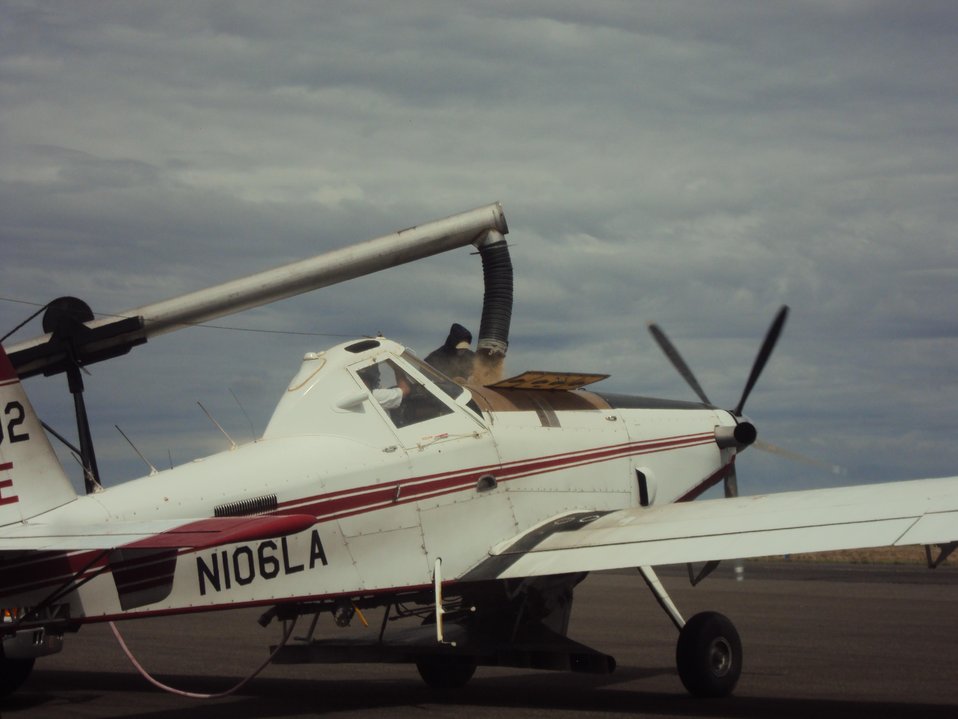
Seed is loaded into the Air Tractor for aerial seeding of severe burned areas of the Silver Fire. The Silver Post Fire response has the Burned Area Emergency Response (BAER) team beginning operations to seed acres of high burn severity and to mulch additional acres. Seeding reduces effects to downstream life, property, and infrastructure by reducing erosion and runoff. Areas of high burn severity are to be seeded with a quick germinating, non-persistent annual cereal barley that would provide rapid ground cover. A small percentage of native perennial species would also be included to give the burned area a jump start in natural recovery, and provide for long-term ground cover. Mulch is the most effective treatment for controlling erosion and runoff, as it provides immediate ground cover. Mulch also assists in stabilizing soil in and around these areas. Aircraft for seeding operations will be based at the Gila National Forest Air Tanker Base.